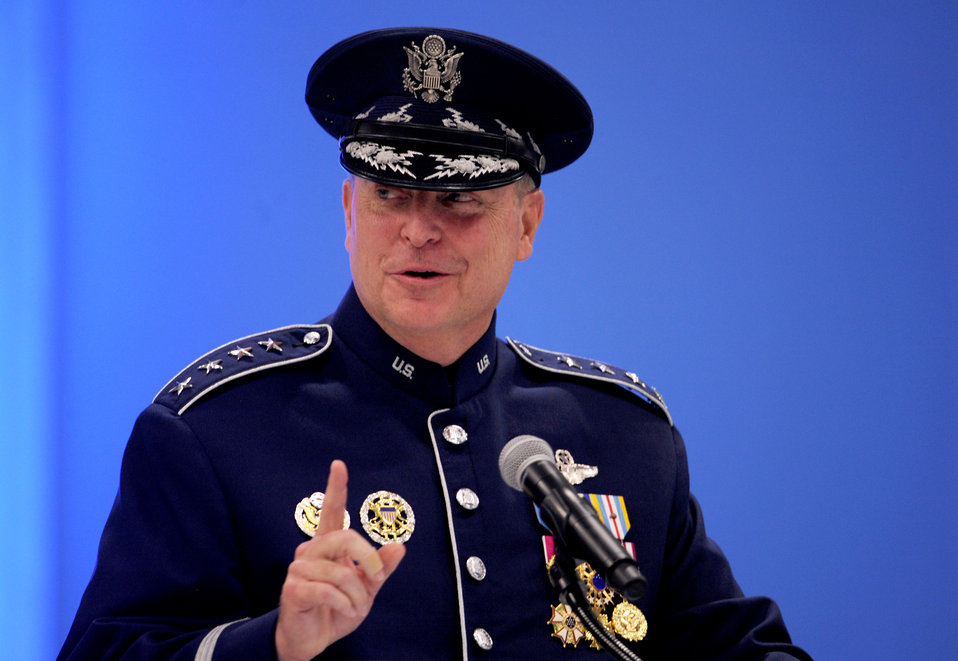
Welsh ‘humbled’ to serve as Air Force chief of staff

Gen. Mark A. Welsh III addresses the audience after being sworn in as the 20th Air Force chief of staff during a ceremony at Joint Base Andrews, Md., Aug. 10, 2012. Prior to his new position, Welsh was the commander of U.S. Air Forces in Europe.